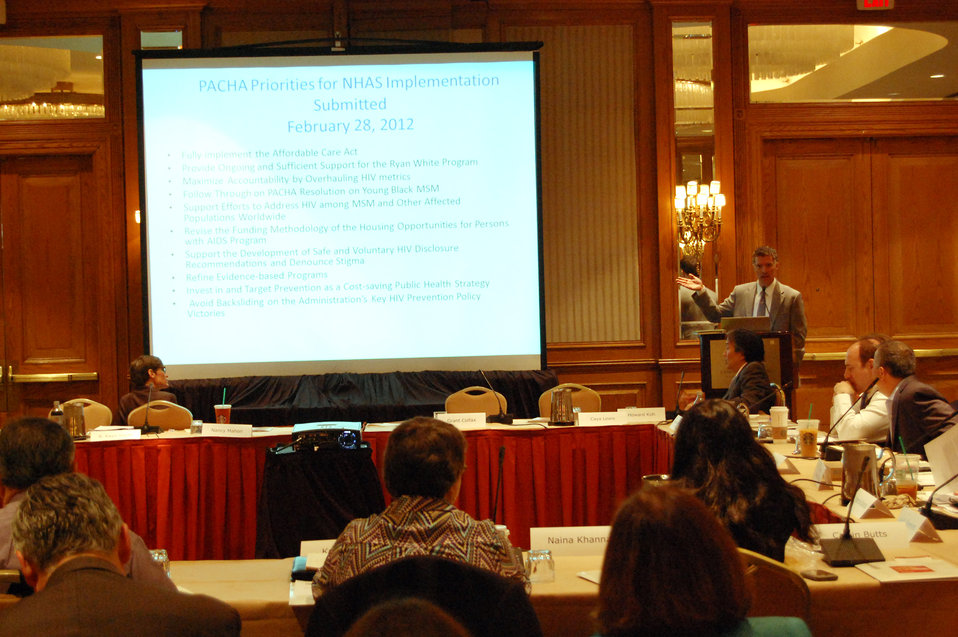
PACHA conf043